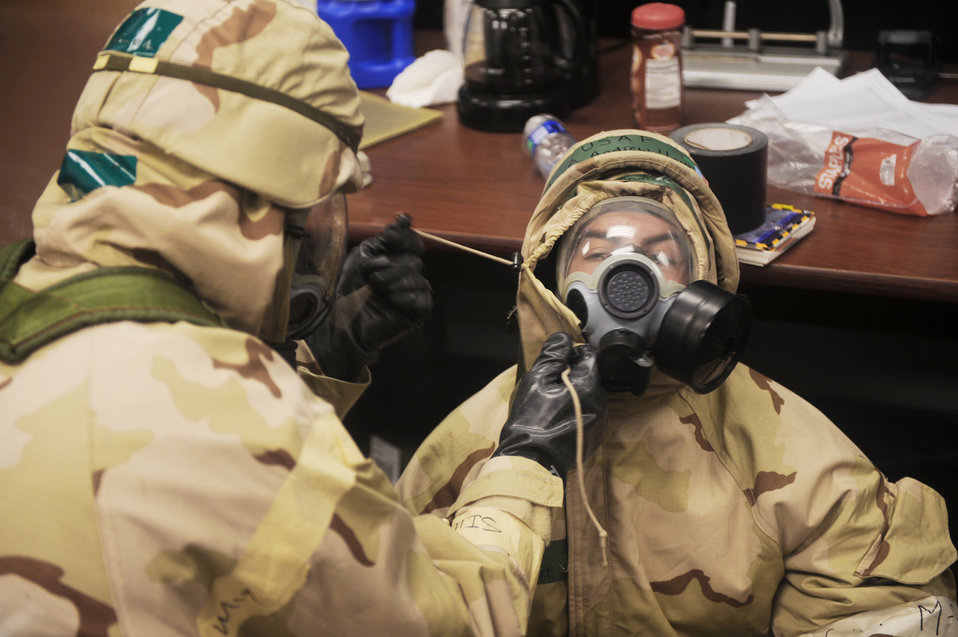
A-Ok in there?

Airmen practice buddy checks to ensure their gas masks have been properly donned during the operational readiness exercise on Seymour Johnson Air Force Base, N.C., Dec. 9, 2009. Buddy checks are accomplished to ensure all straps and buttons have been fastened properly to avoid contamination.